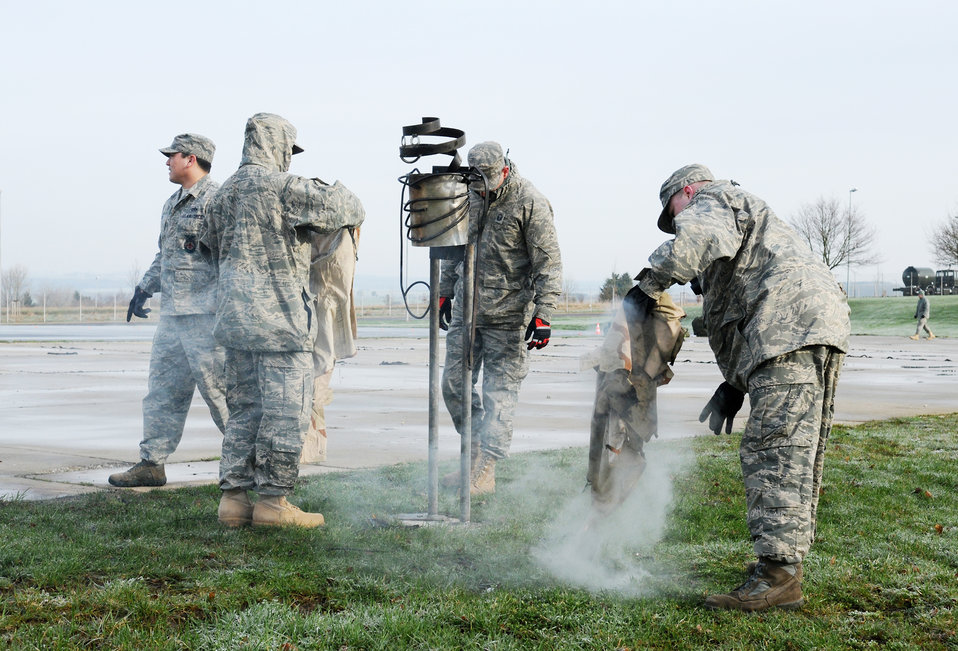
Spangdahlem Airmen train for evaluation

Firefighters from the 52nd Civil Engineer Squadron replace a burnt uniform on a dummy during individual core competency skills training April 2, 2010, Spangdahlem Air Base, Germany.